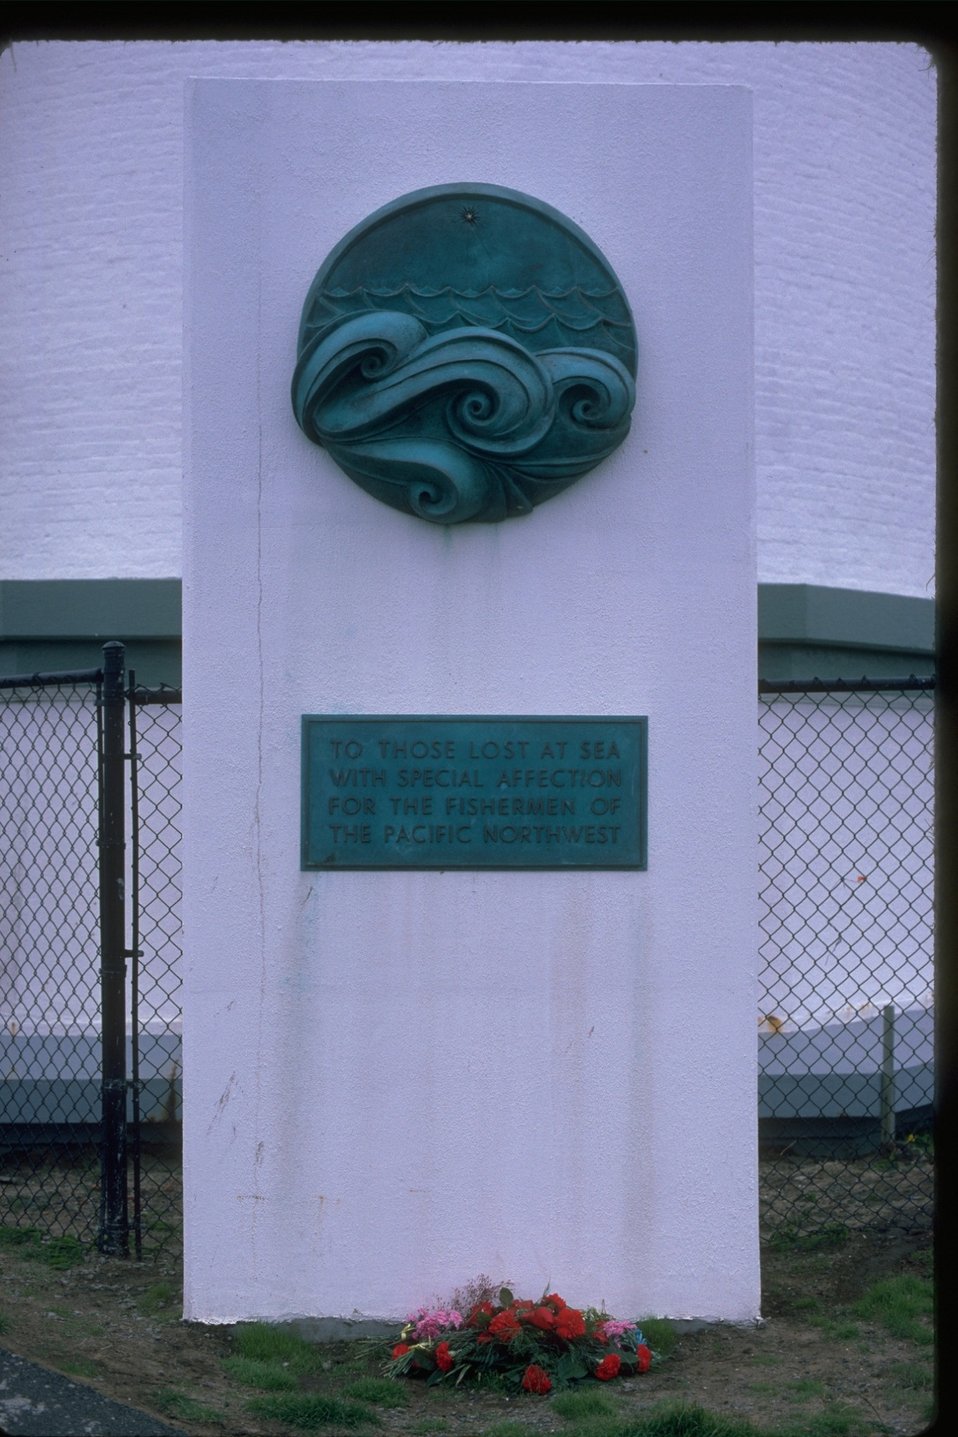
Fisherman's memorial near Yequina lighthouse.